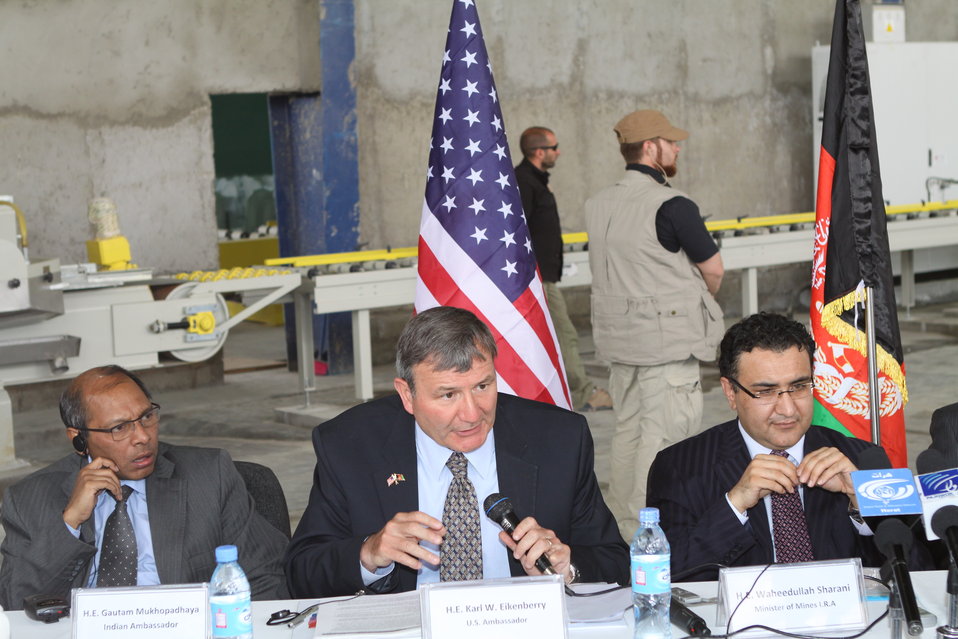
100525 Hirat Marble Conference 365